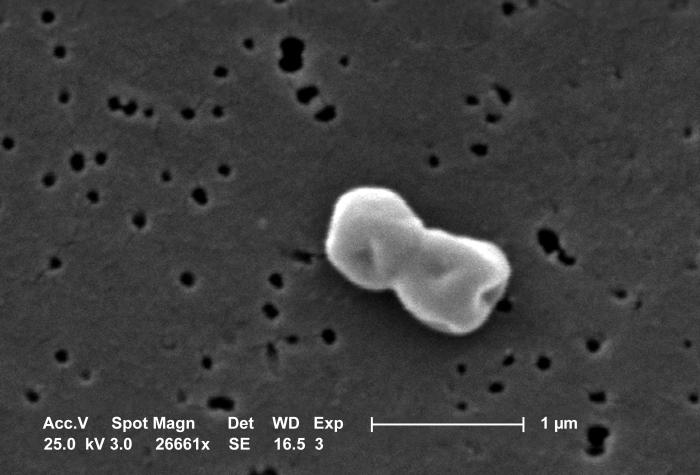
This SEM depicts a highly magnified pair of Gram-negative, non-motile Acinetobacter baumannii bacteria; Mag - 26661x.